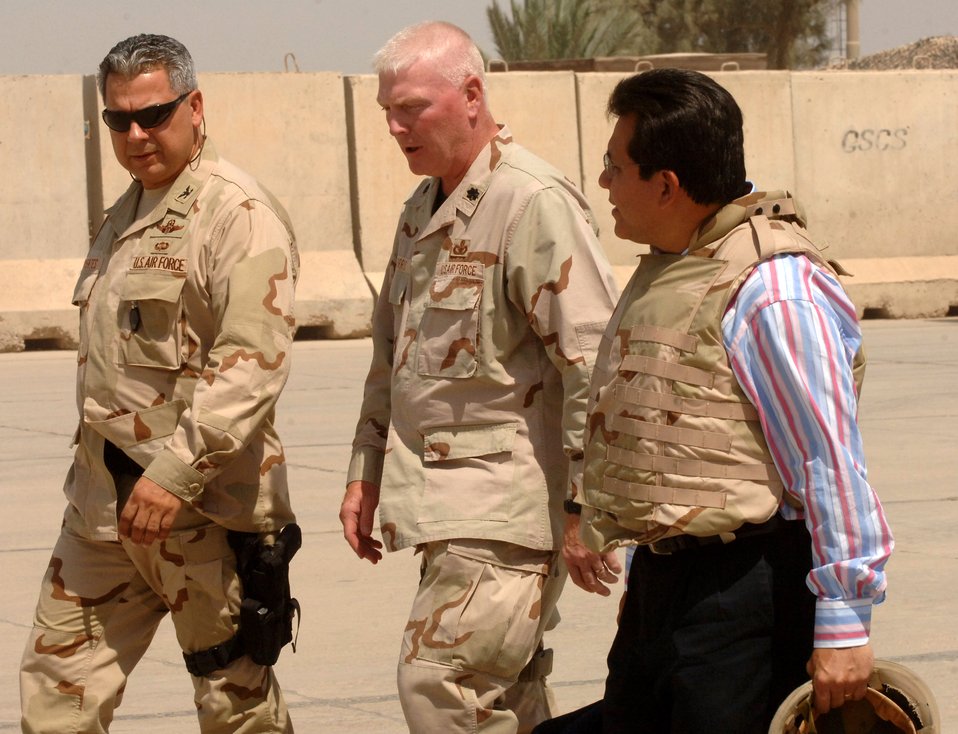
Attorney general visits Baghdad

U.S. Attorney General Alberto Gonzales walks with Col. Abel Barrientes, the chief coalition military adviser at the Iraqi New Al Muthana Air Base, and Lt. Col. John Morris, 447th Air Expeditionary Group deputy commander, Aug. 29, during the U.S. Justice Department chief's tour.